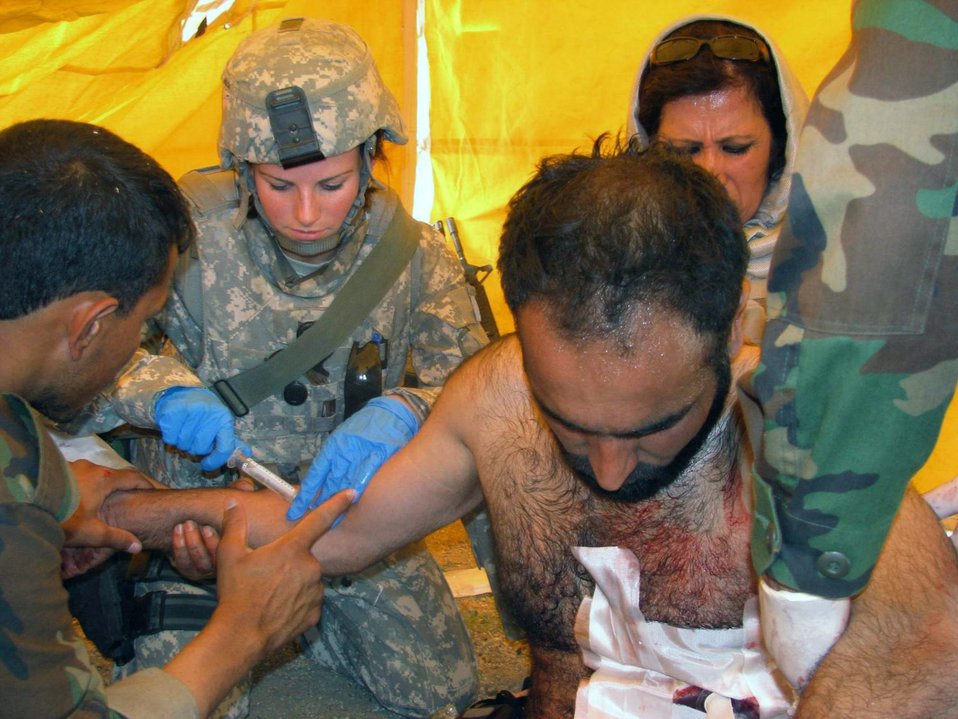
Reconstruction team helps Afghans

Senior Airman Robin Mock helps stabilize an Afghan national police officer with a gunshot wound May 7 in the Laghman Province in Afghanistan. Laghman Provincial Reconstruction Team medics and an Afghan national army doctor were conducting a joint-medical outreach in Sur Ghar Village at the time of the incident. The Afghan officer was wounded during an unrelated poppy eradication mission a few kilometers away.